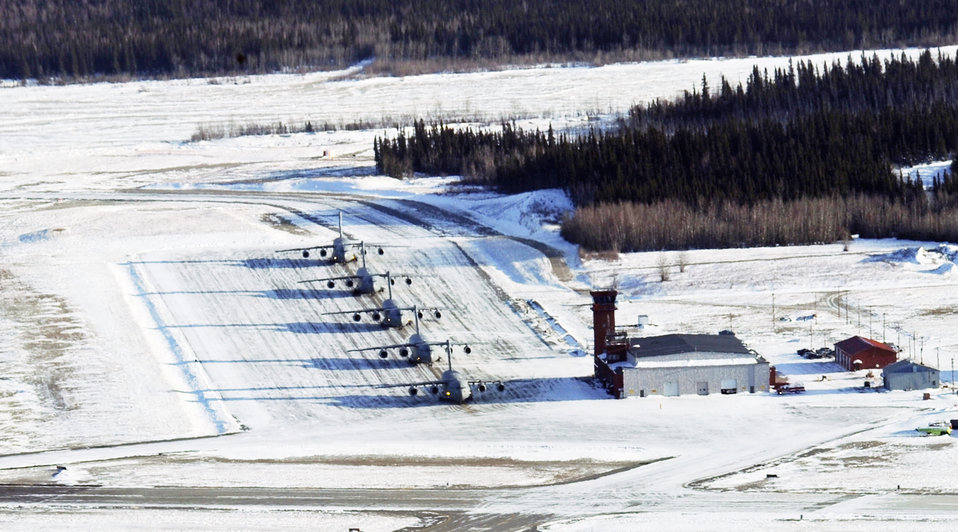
C-17s participate in Pacific Rendezvous

Waiting to take off, a group of C-17 Globemaster IIIs sit on the ramp Feb. 10, 2010, at Fort Greely, Alaska. The aircraft from Pacific Air Forces and Air Mobility Command were participating in an exercise that involved exploring capabilities in large formations and improving tactical awareness among aircrews.